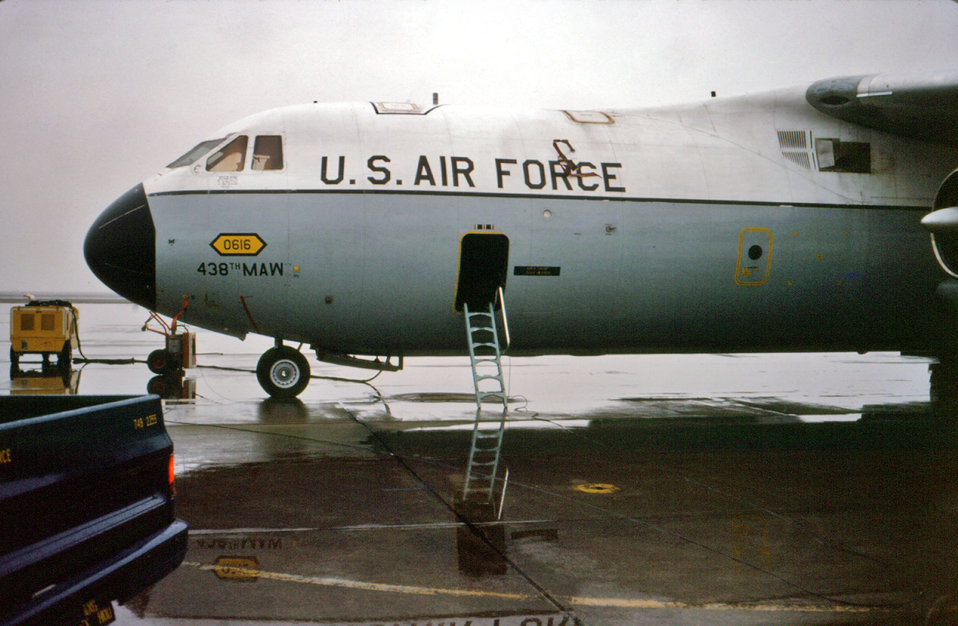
This 1976 photograph showed the exterior fuselage of a C-141 jet that was used to transport the CDC's mobile quarantine facility (MQF) --see PHIL ID# 7234.